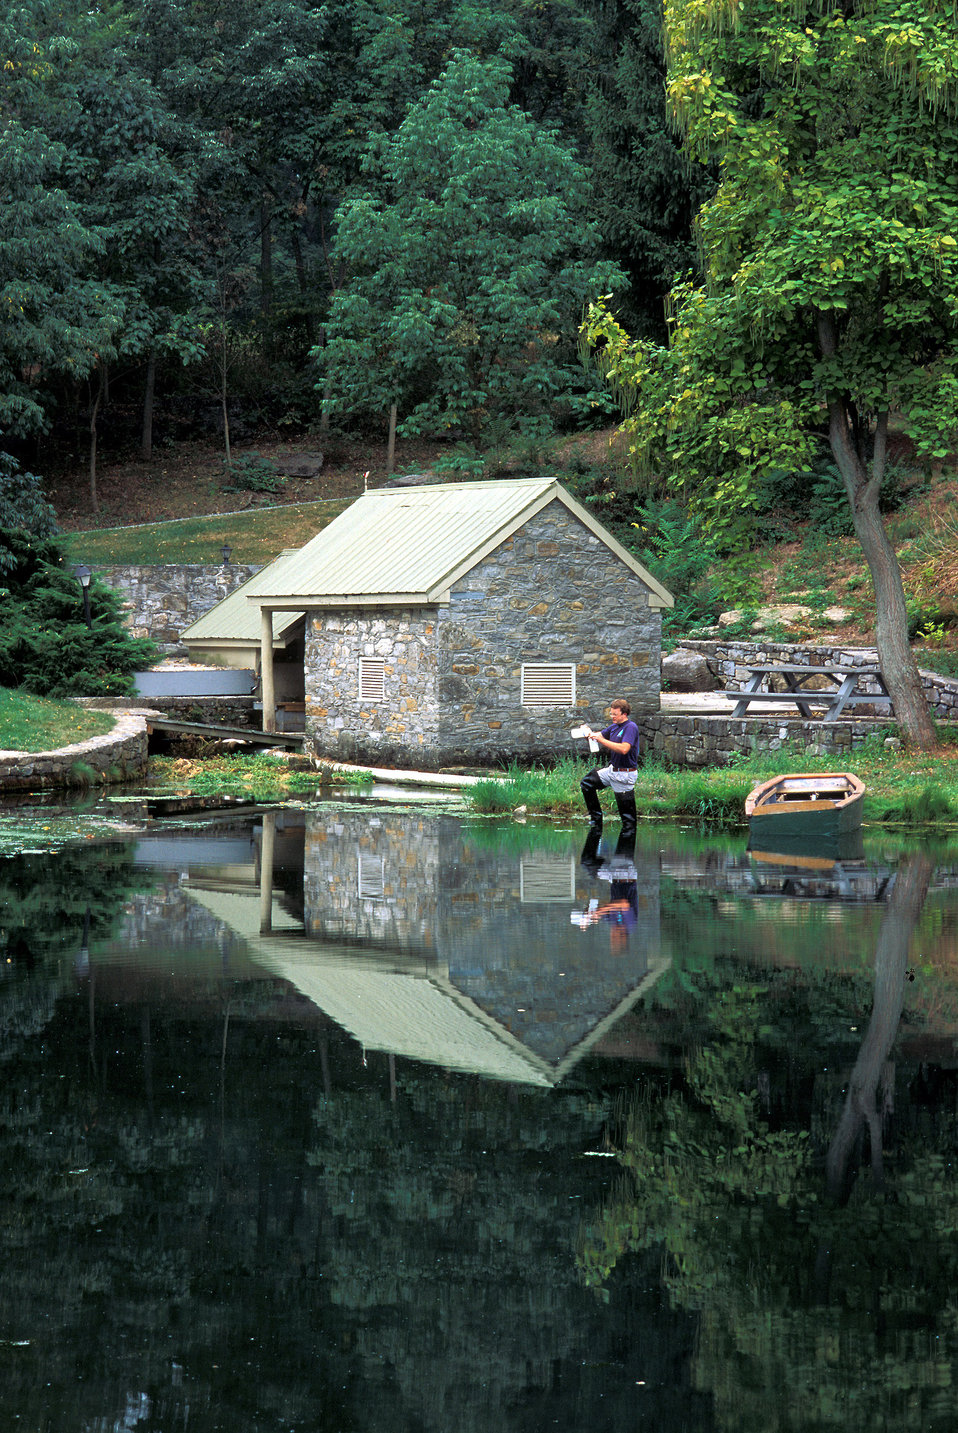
Near the springhouse (circa 1775) at Morgan's Spring, WV, system manager Joe Hankins collects water samples for chemical analysis. Eliminating the problem of water pollution and increasing fish yields are primary objectives of a continuing aquaculture research and demonstration project at this location supported by a grant from the U.S. Department of Agriculture.